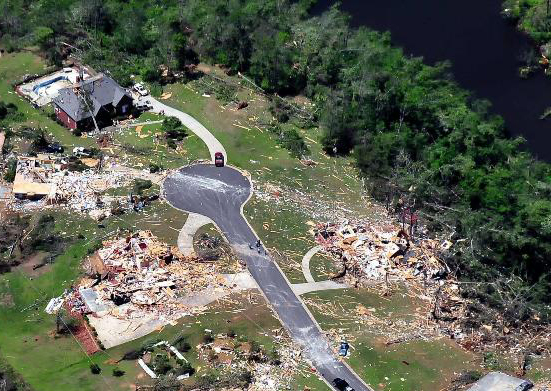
Natural Disasters

A Civil Air Patrol aircrew took this image April 29, 2011, in Jefferson County, Alabama. Members of the CAP are flying in support of first responders and state and local officials as they assess tornado damage to the region.